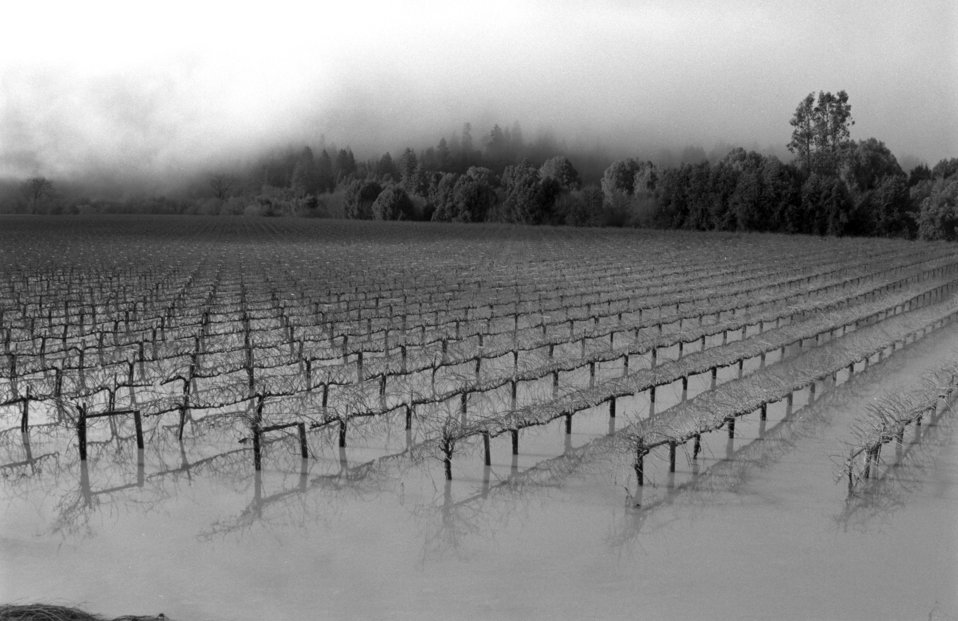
Farms were flooded in the Sacramento River Basin on January 13, 1995. The storm drainage system of the Sacramento River Basin failed, which resulted in extensive flooding of the region.